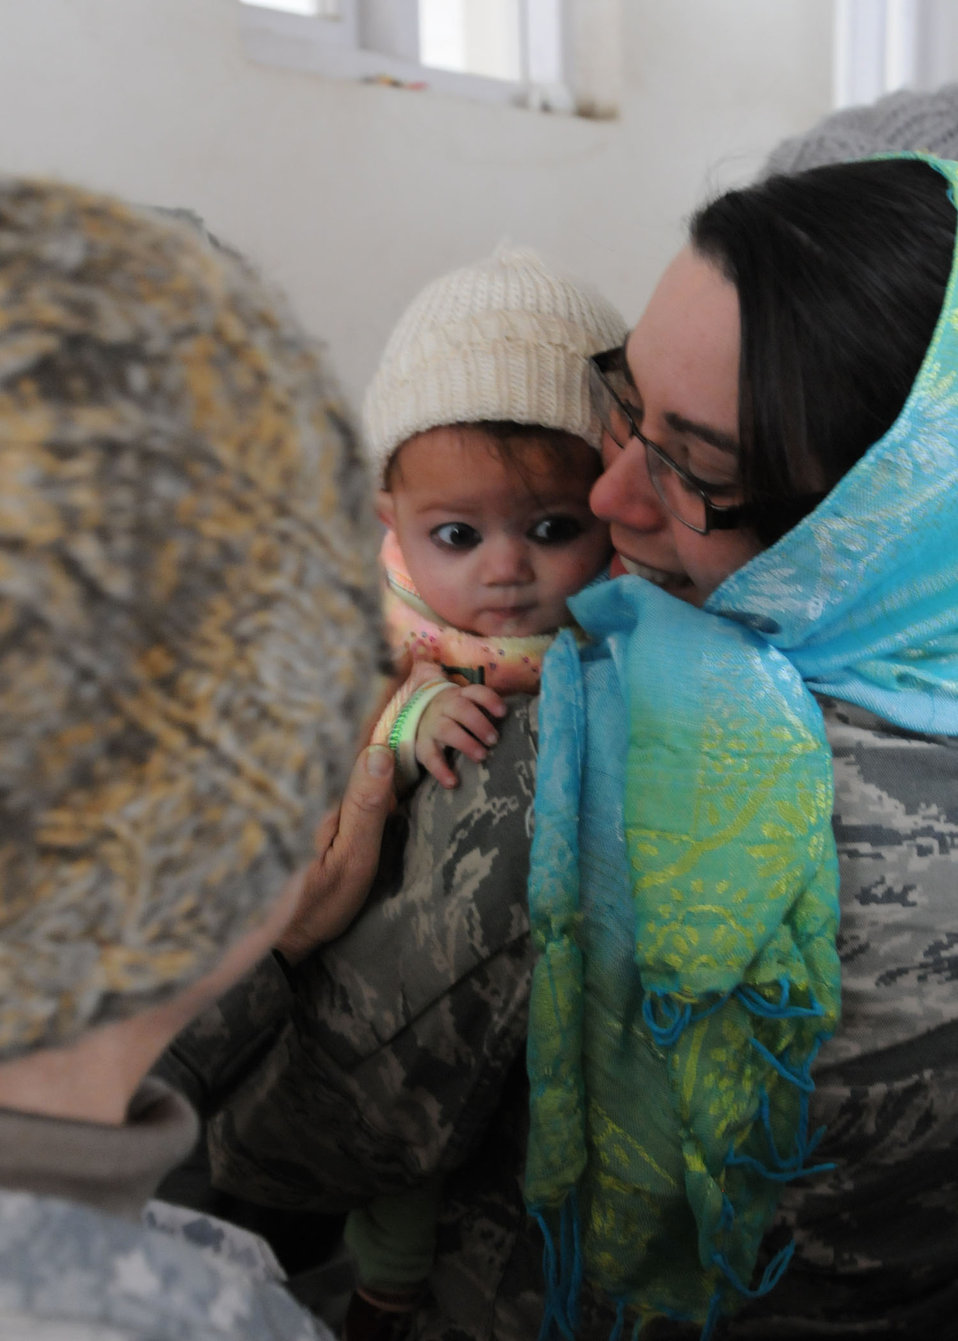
Visiting Afghan women

Staff Sgt. Danielle Sempter holds a 6-month old Afghan child during a visit to an all-girls school in the Panjshir Valley in Afghanistan. Servicemembers from a Provincial Reconstruction Team at Bagram Airfield, Afghanistan, traveled to Forward Operating Base Lion in the Panjshir Valley to meet with Afghan women there. Female servicemembers deployed to FOB Lion work hand in hand with the local Afghan women, teaching them things like first aid and how to increase their crop output. Sergeant Sempter is from Swansborough, N.C. and is deployed from Ramstein Air Base, Germany.